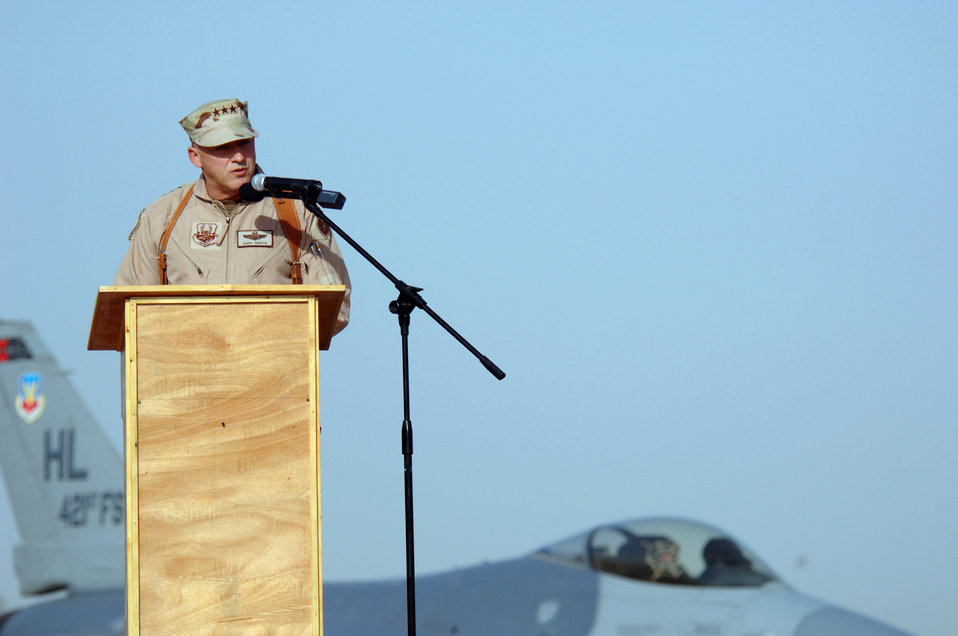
Airmen are battlefield innovators

Lt. Gen. Gary North talks to Airmen of the 332d Air Expeditionary Wing during the wing's change of command July 5. General North is the commander of U.S. Central Command Air Forces.